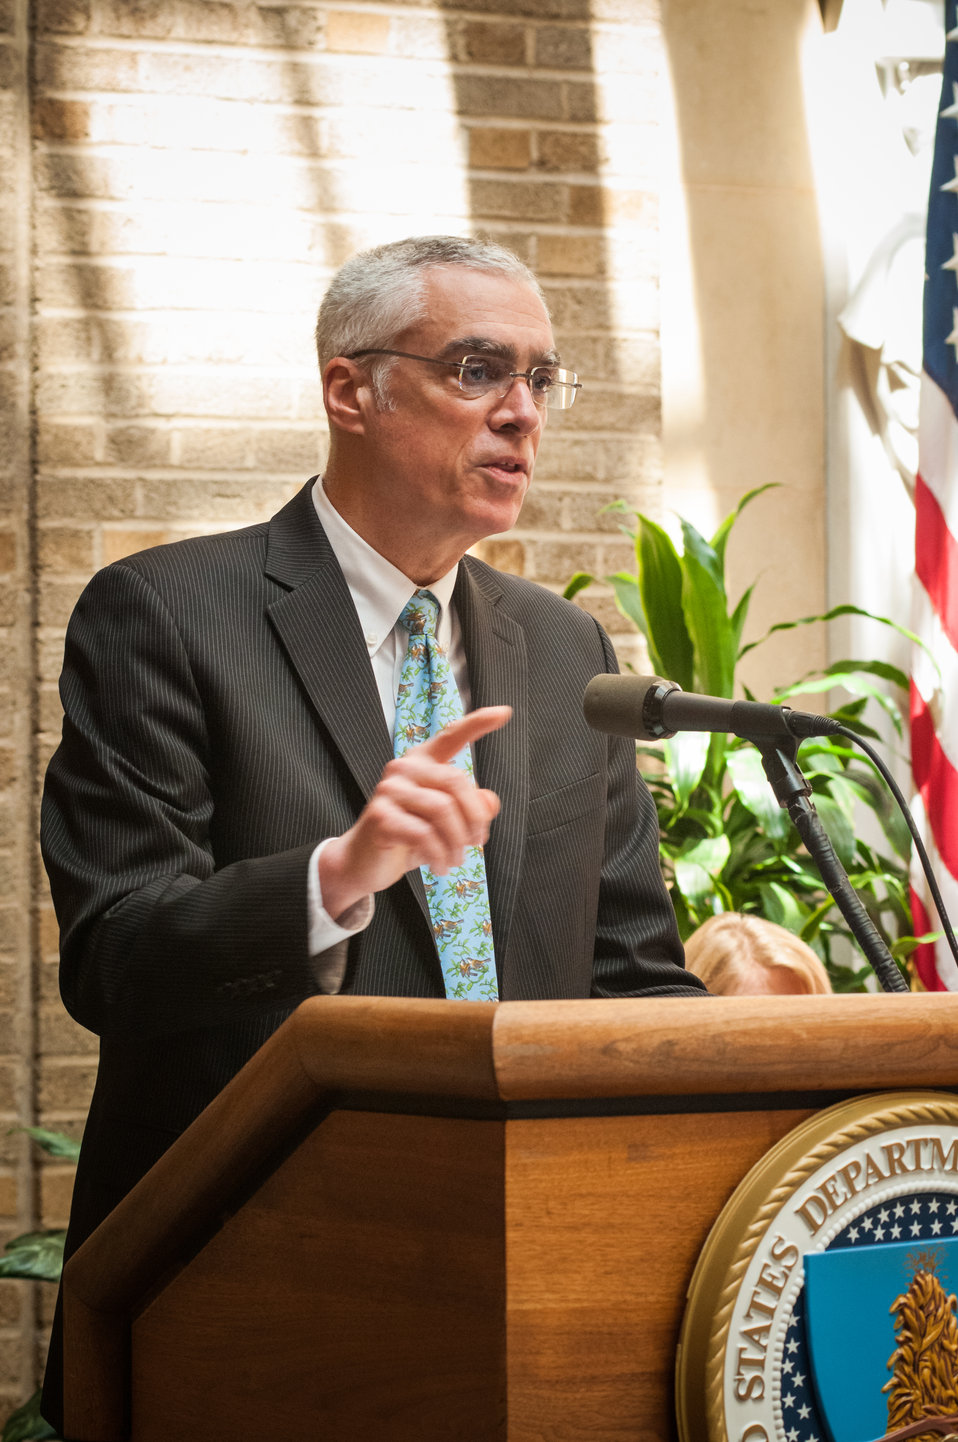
Environmental Protection Agency (EPA) Acting Administrator Bob Perciasepe speaks at the launching of the U.S. Food Waste Challenge held at the U.S. Department of Agriculture (USDA) in Washington, D.C. on Tuesday, Jun. 4, 2013. The U.S. Food Waste Challenge is a nationwide effort by USDA and the Environmental Protection Agency (EPA) to reduce, recover and recycle U.S. food waste. Representatives from Gills Onions/Rio Farms, Unilever, Food Marketing Institute, National Restaurant Association, Grocery Manufacturers Association, Food Waste Reduction Alliance, Feeding America and Rock and Wrap It Up! were also present.